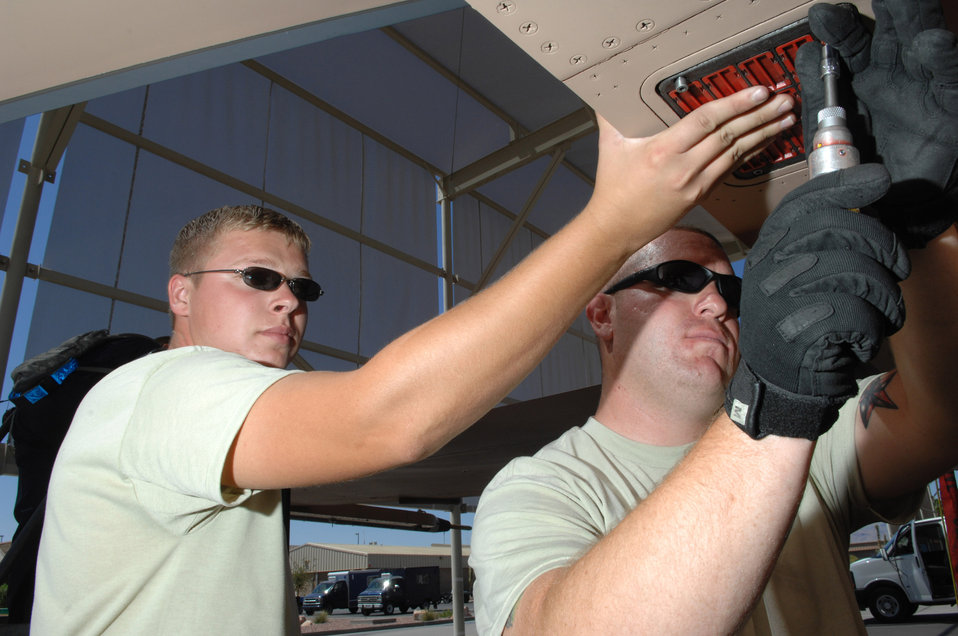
Teamwork

Senior Airman Gregory Strouse (left) and Staff Sgt. Sean Minnick load chaff and flares onto an F-16 Fighting Falcon July 24 at Nellis Air Force Base, Nev. The 926th Group is an Air Force Reserve unit under the 10th Air Force, Naval Air Station Joint Reserve Base, Fort Worth, Texas. The group is located at Nellis AFB as an associate unit to the Air Force Warfare Center. Through total force integration, reservists are integrated into active duty Air Force units, accomplishing the mission alongside active-duty Airmen on a daily basis. Airman Strouse is a 57th Aircraft Maintenance Squadron F-16 weapons load crew member and Sergeant Minnick is a 926th Group Det. 2 F-16 weapons loader team chief.